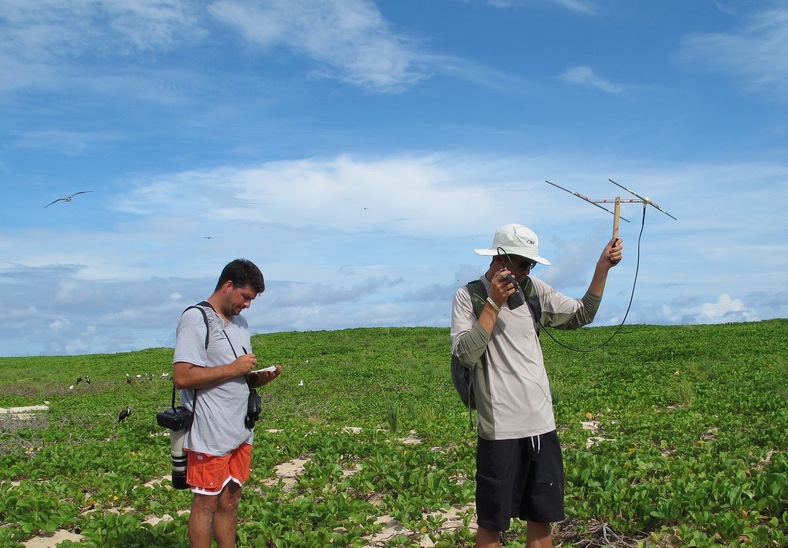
tracking relocated millerbirds

Laysan Island
Sept. 11, 2012